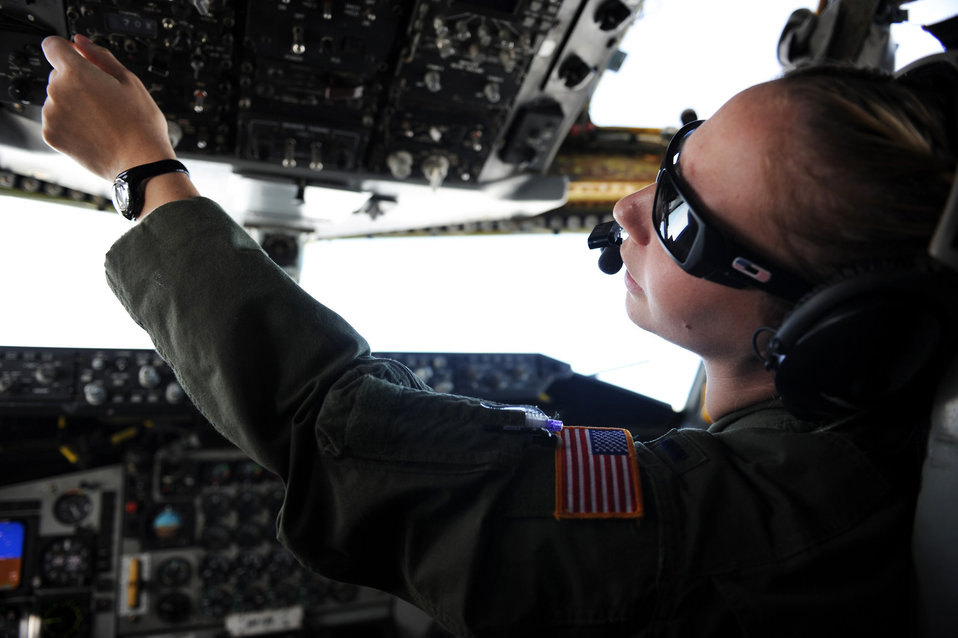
KC-135 Stratotanker refueling mission

1st Lt. Emily Kubusek flies the historic